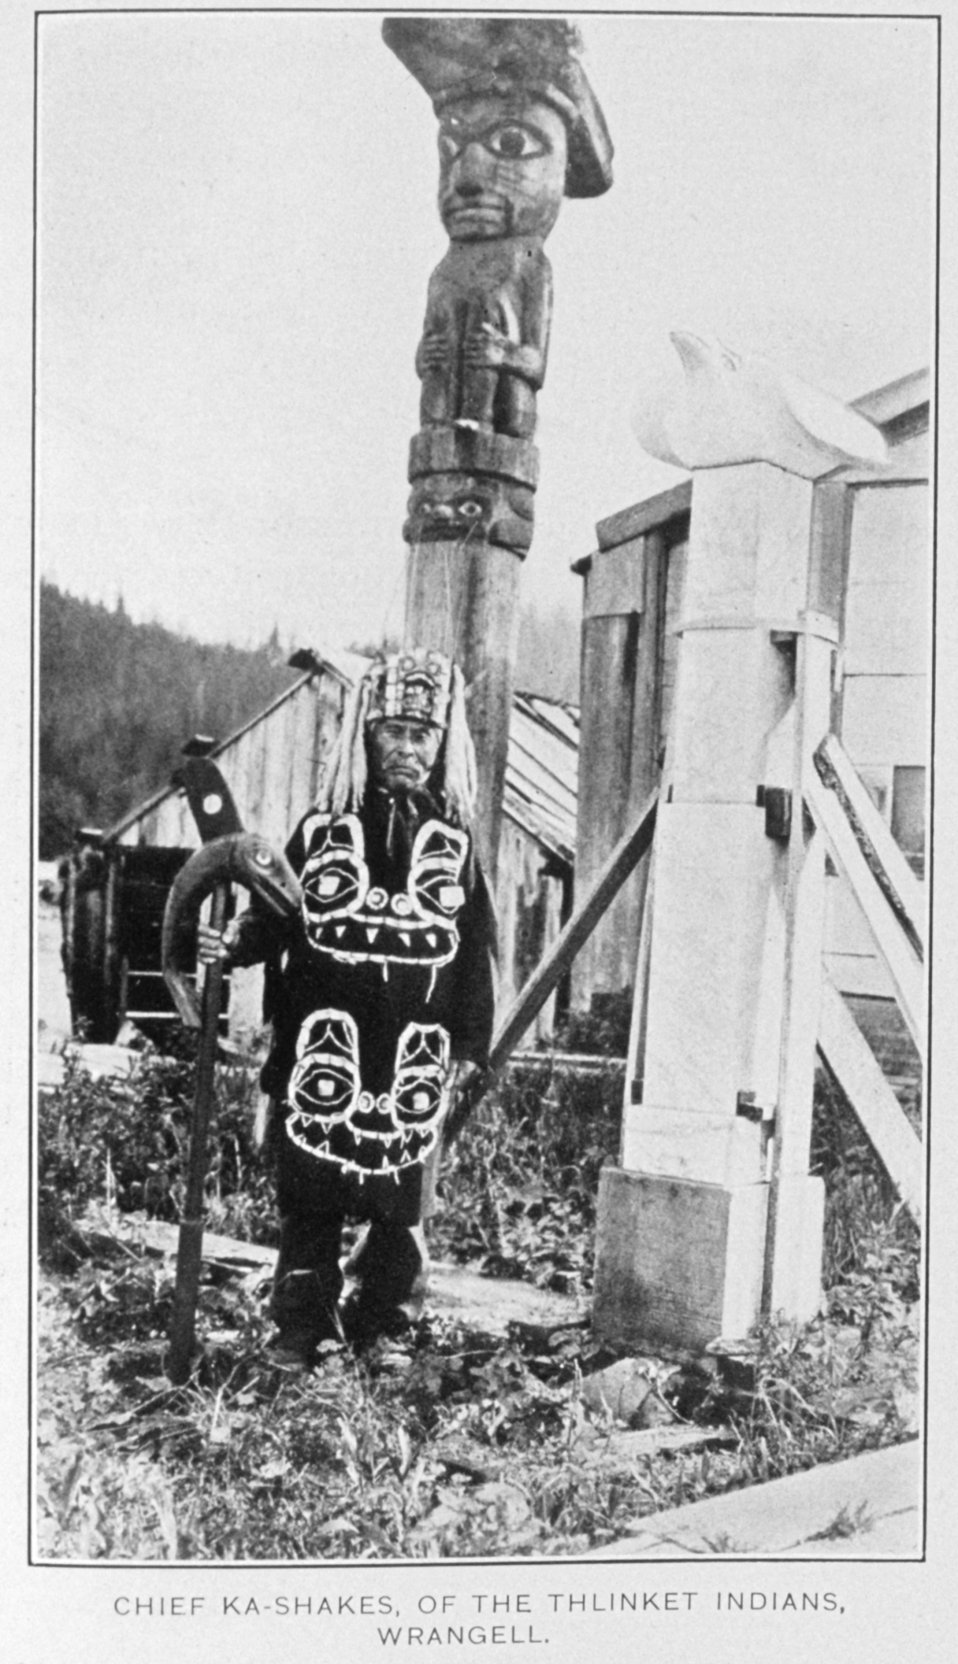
Chief Ka-Shakes of the Thlinket Indians, Wrangell. In: 'Report of Alaska Investigations,' by E. Lester Jones, p. 102, 1914. Department of Commerce, Bureau of Fisheries. Library Call No. 639: 945 J77.